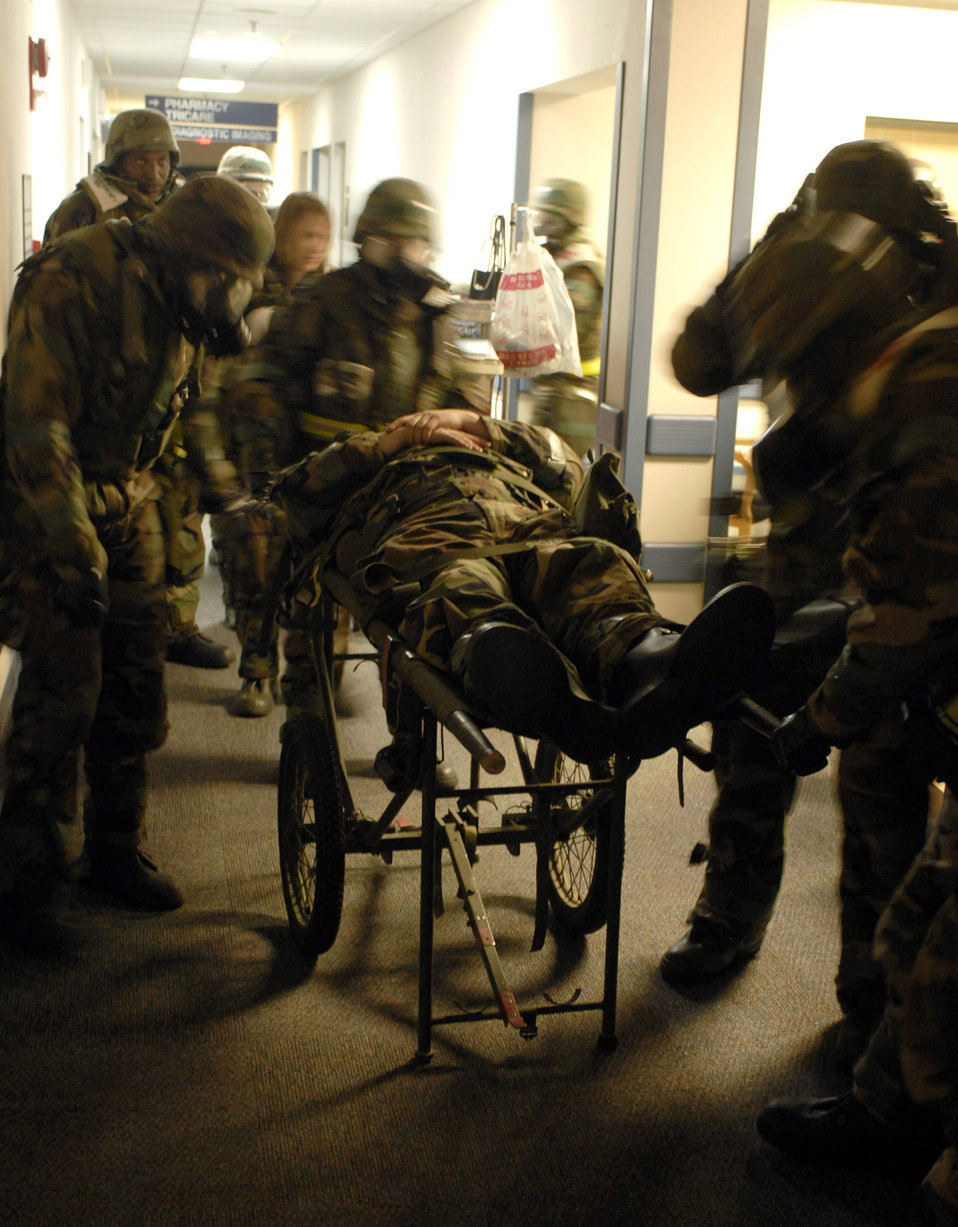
Testing readiness at Kunsan

8th Medical Operations Squadron members rush a cardiac arrest victim in a simulated exercise during the Peninsula Operational Readiness Exercise Nov. 7 at Kunsan Air Base, South Korea. The exercise is conducted to ensure base members remain ready to execute its mission.